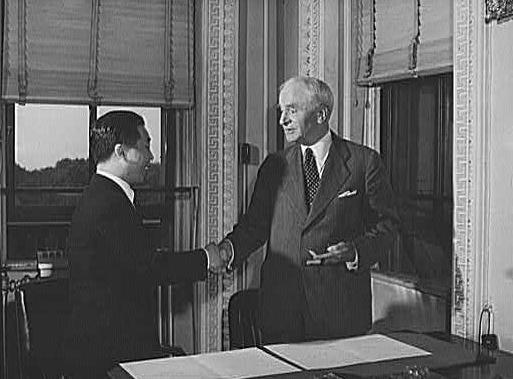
Secretary Hull with Chinese Ambassador Wei Tao-Ming

Secretary of State Cordell Hull exchanging ratifications of the treaty abolishing extra-territorial 'rights' of the United States in China with Chinese Ambassador Wei Tao-Ming at the State Department.